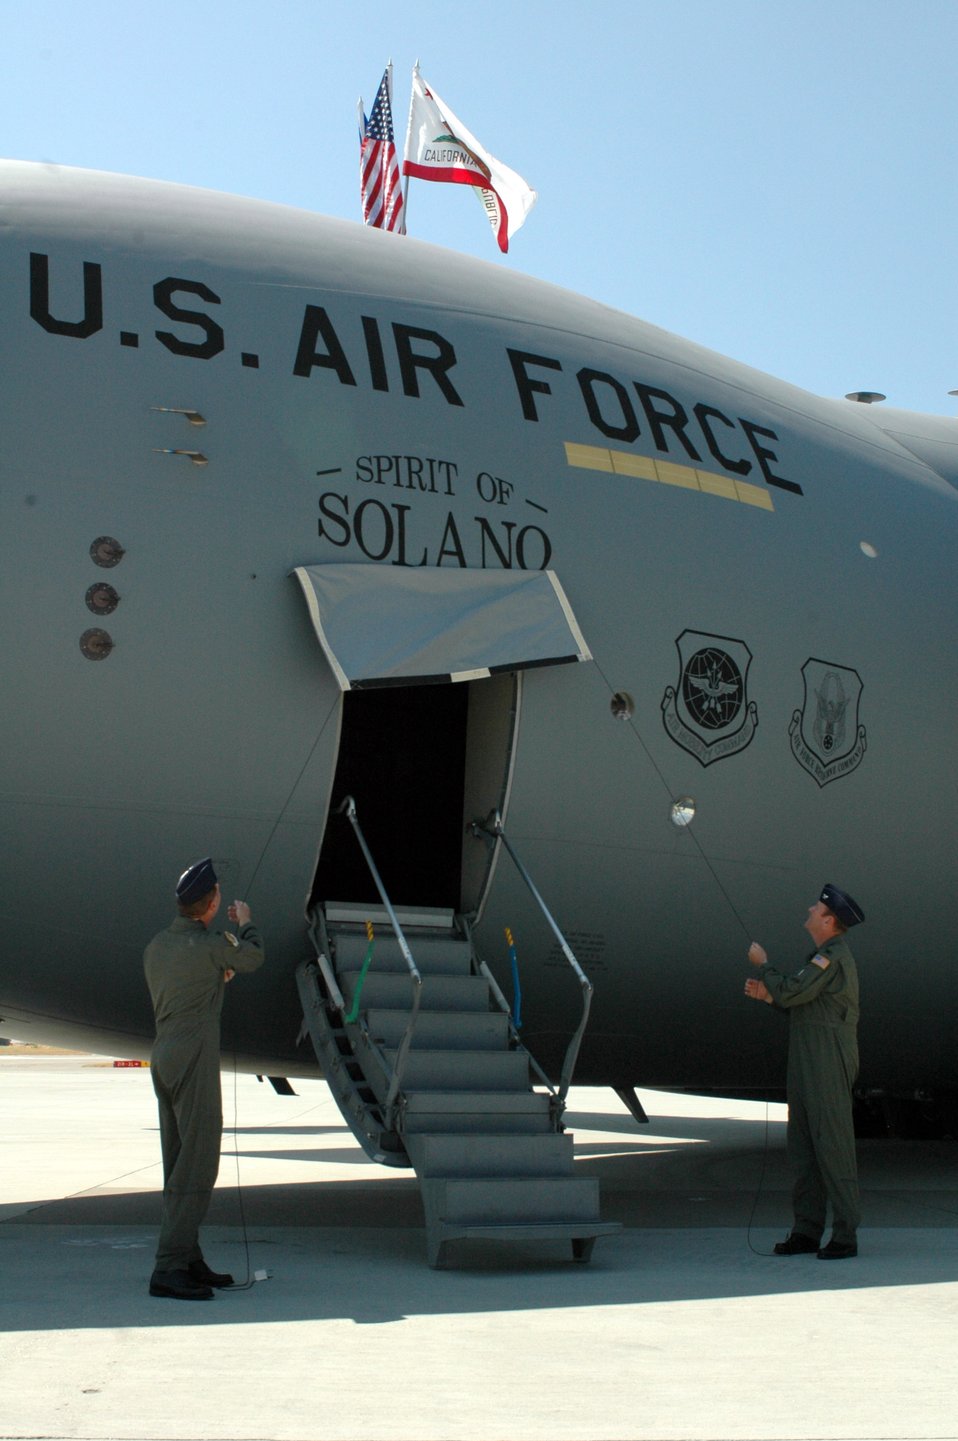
'Spirit of Solano' arrives at Travis

Col. Steve Arquiette, 60th Air Mobility Wing commander, and Col. Robert Millmann, 349th AMW acting commander, unveil the